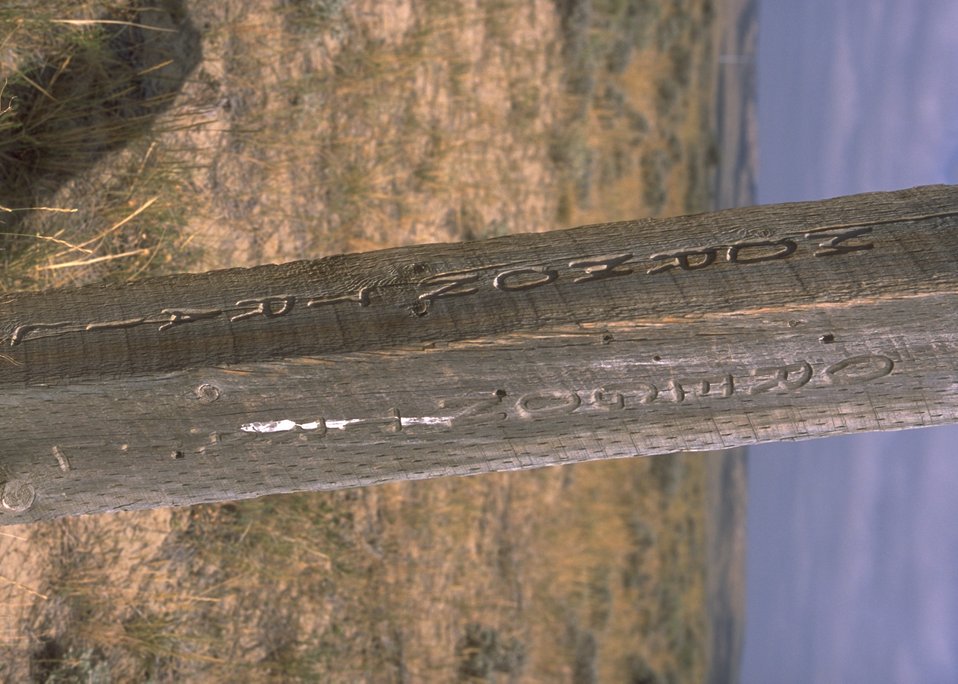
Oregon & Mormon Trail marker, Casper Field Office.